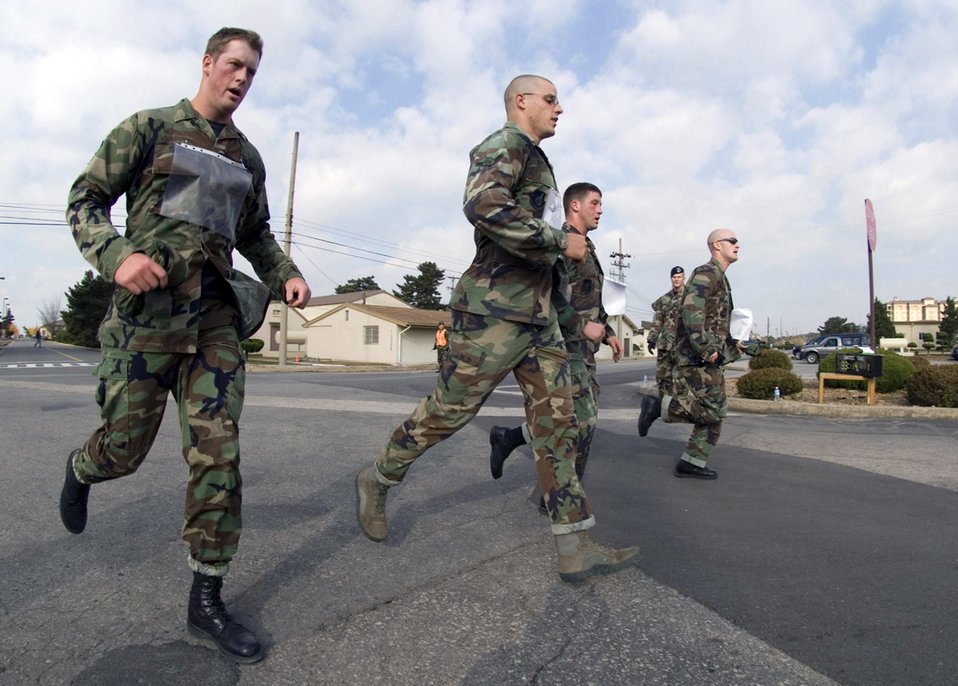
Running a ruck

Members of the 8th Security Forces Squadron team, (from left) Senior Airman Brad Tubbs, Senior Airman Dustin Manning, Airman James Butler and 1st Lt. Brett Skates, cross the finish line of the 1st Veterans Day Memorial Ruck/Run held Nov. 17 at Kunsan Air Base, Republic of Korea. Ten teams, each comprising four members, participatied in the 10K march carrying 40-pound ruck sacks followed by a 1.5 mile run. The 8th SF team finished in first place with an overall team time of 1:33:16. Teams from the Republic of Korea air force joined U.S. teams from Kunsan and Osan air bases for the competition in an effort to build teamwork and camaraderie.